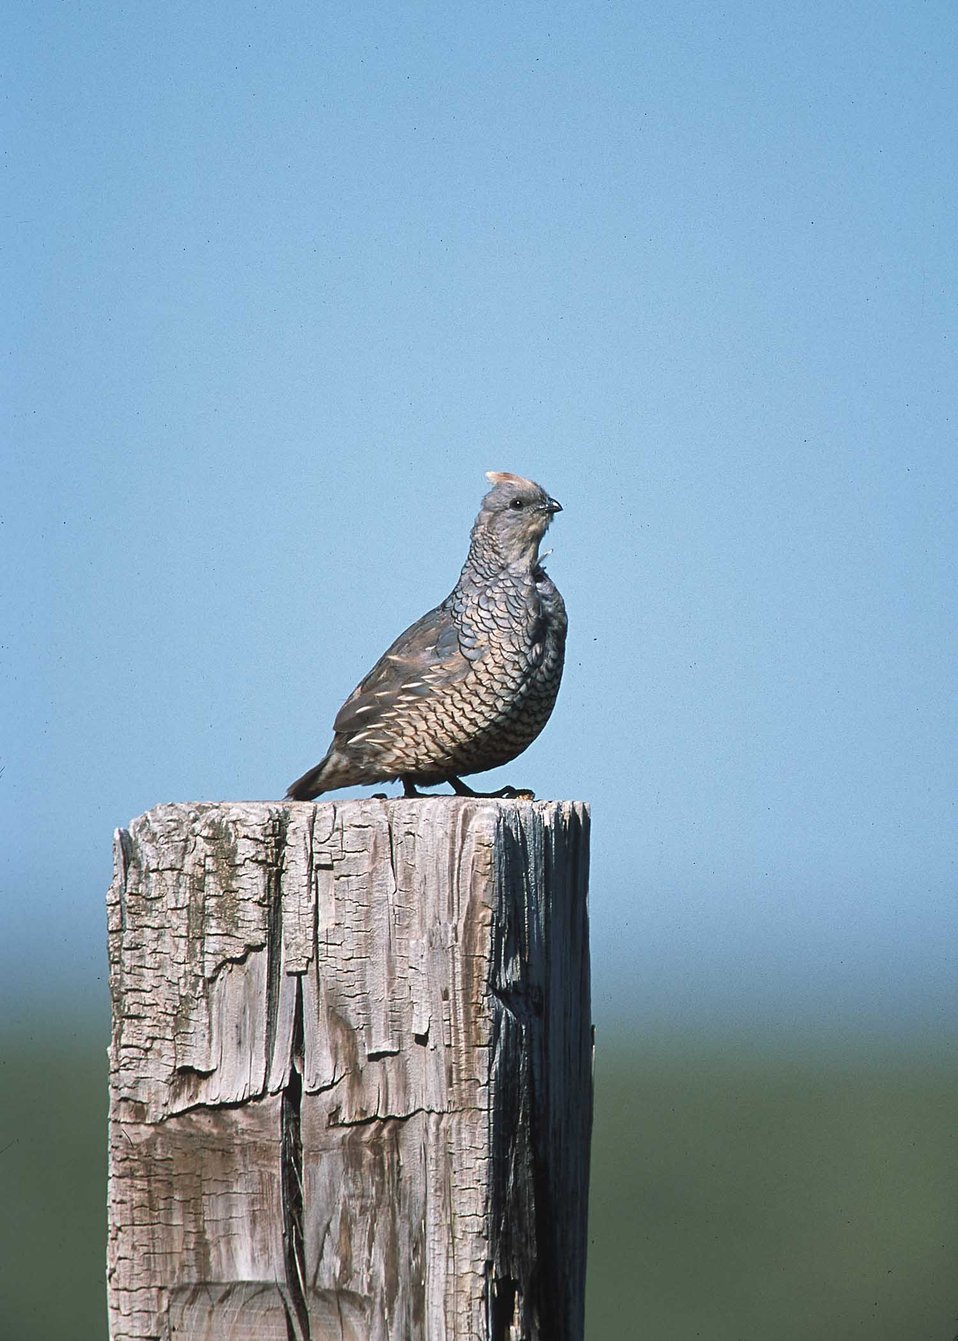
Scale quail perched on post in Eastern New Mexico ranch.